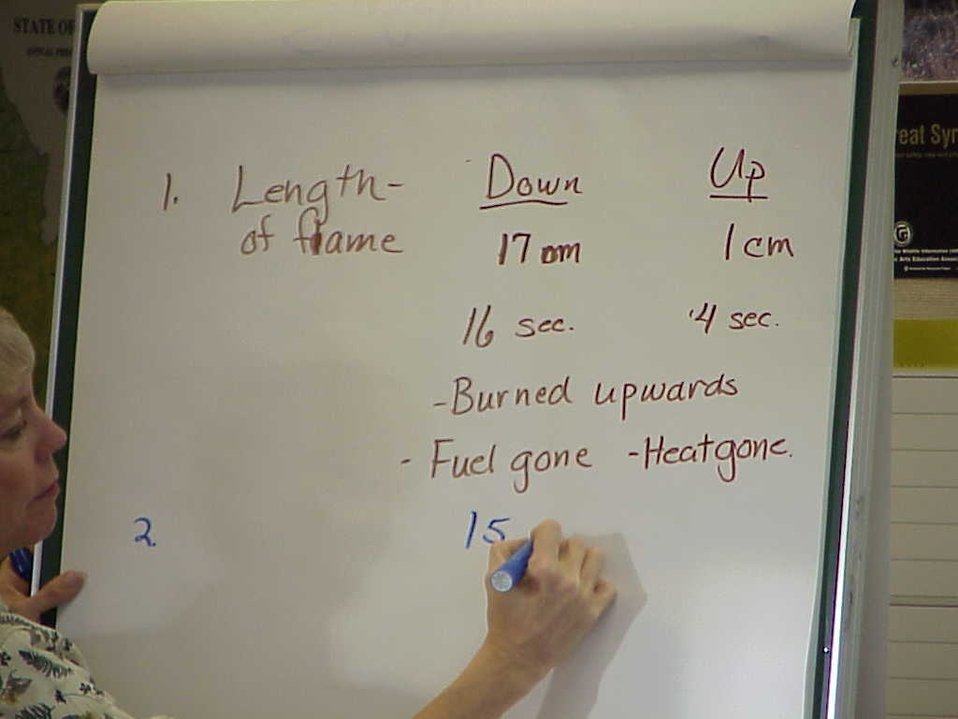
Environmental Education Fire Workshop Timberline High School Fall 2000